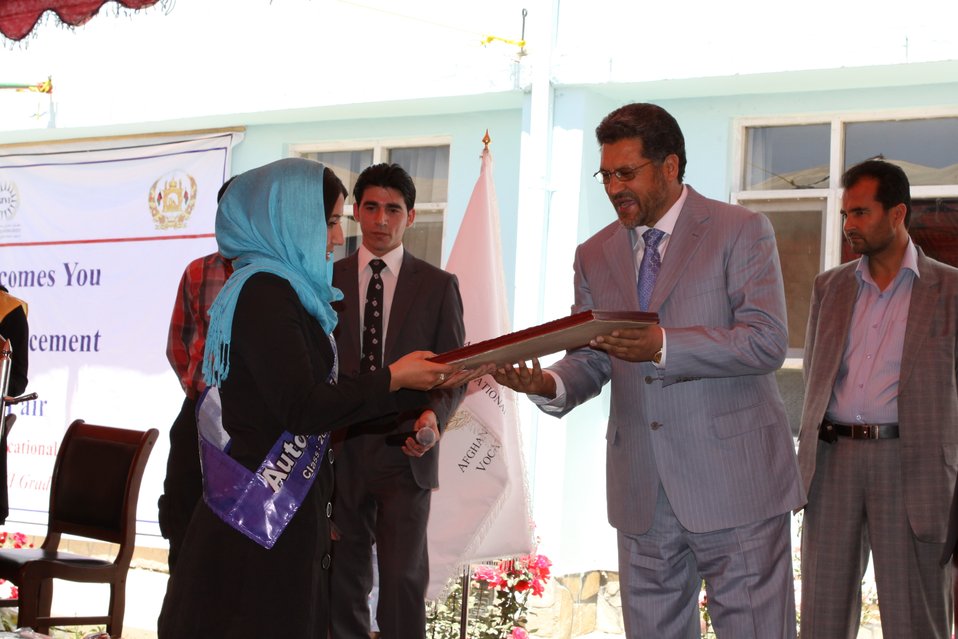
100522 ATVI Graduation 115